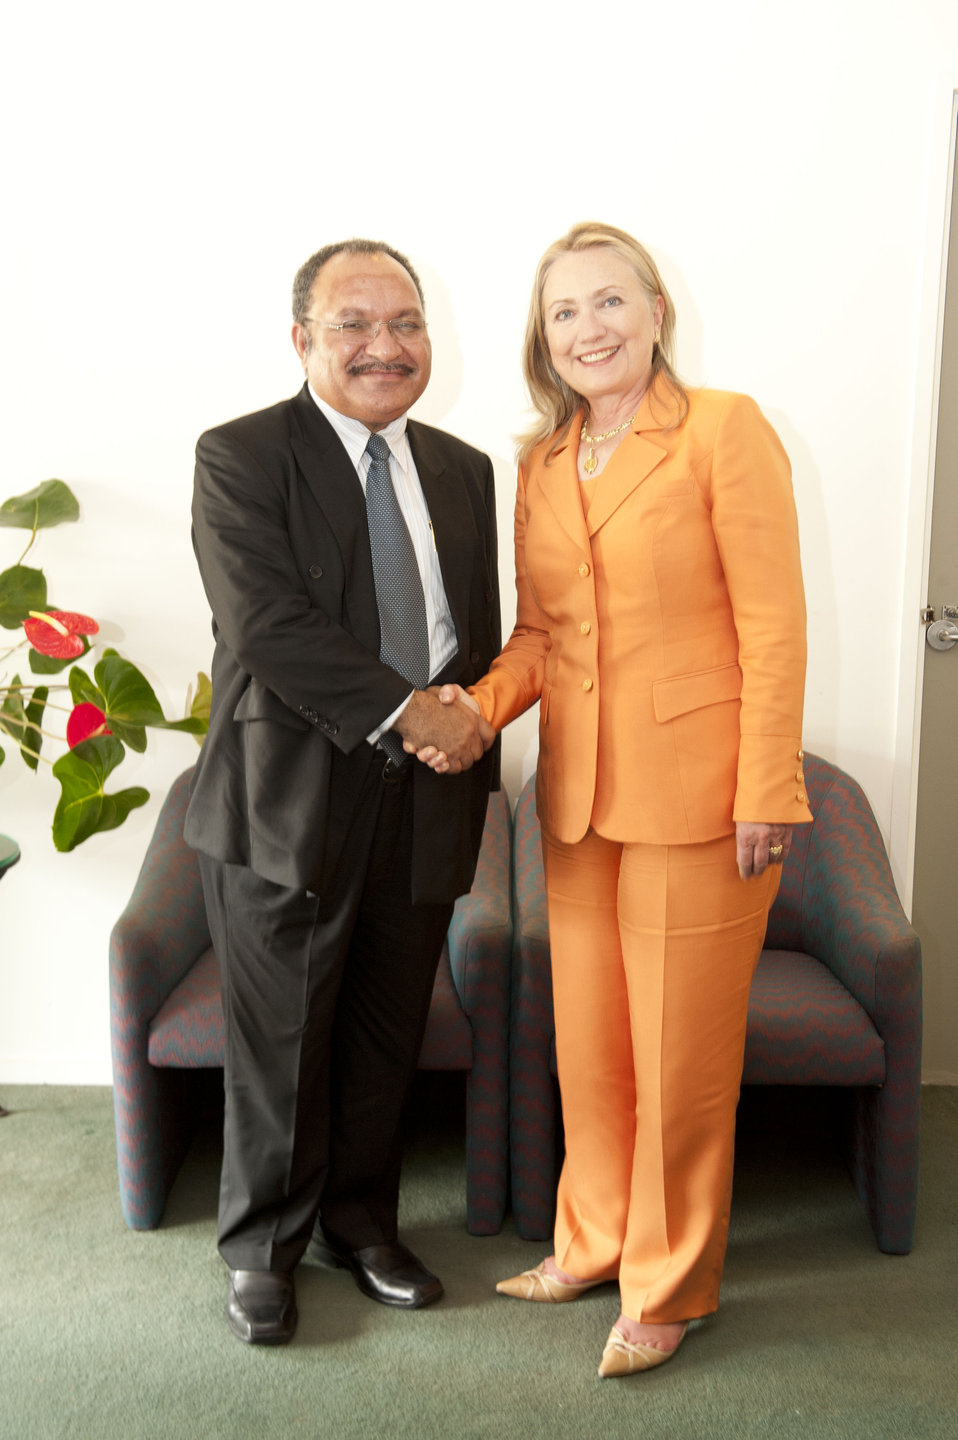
Secretary Clinton With Papua New Guinea Prime Minister O'Neill

U.S. Secretary of State Hillary Rodham Clinton meets with the Prime Minister Peter Charles Paire O'Neill of Papua New Guinea following their meeting at the Pacific Islands Forum in Rarotonga, Cook Islands, August 31, 2012.